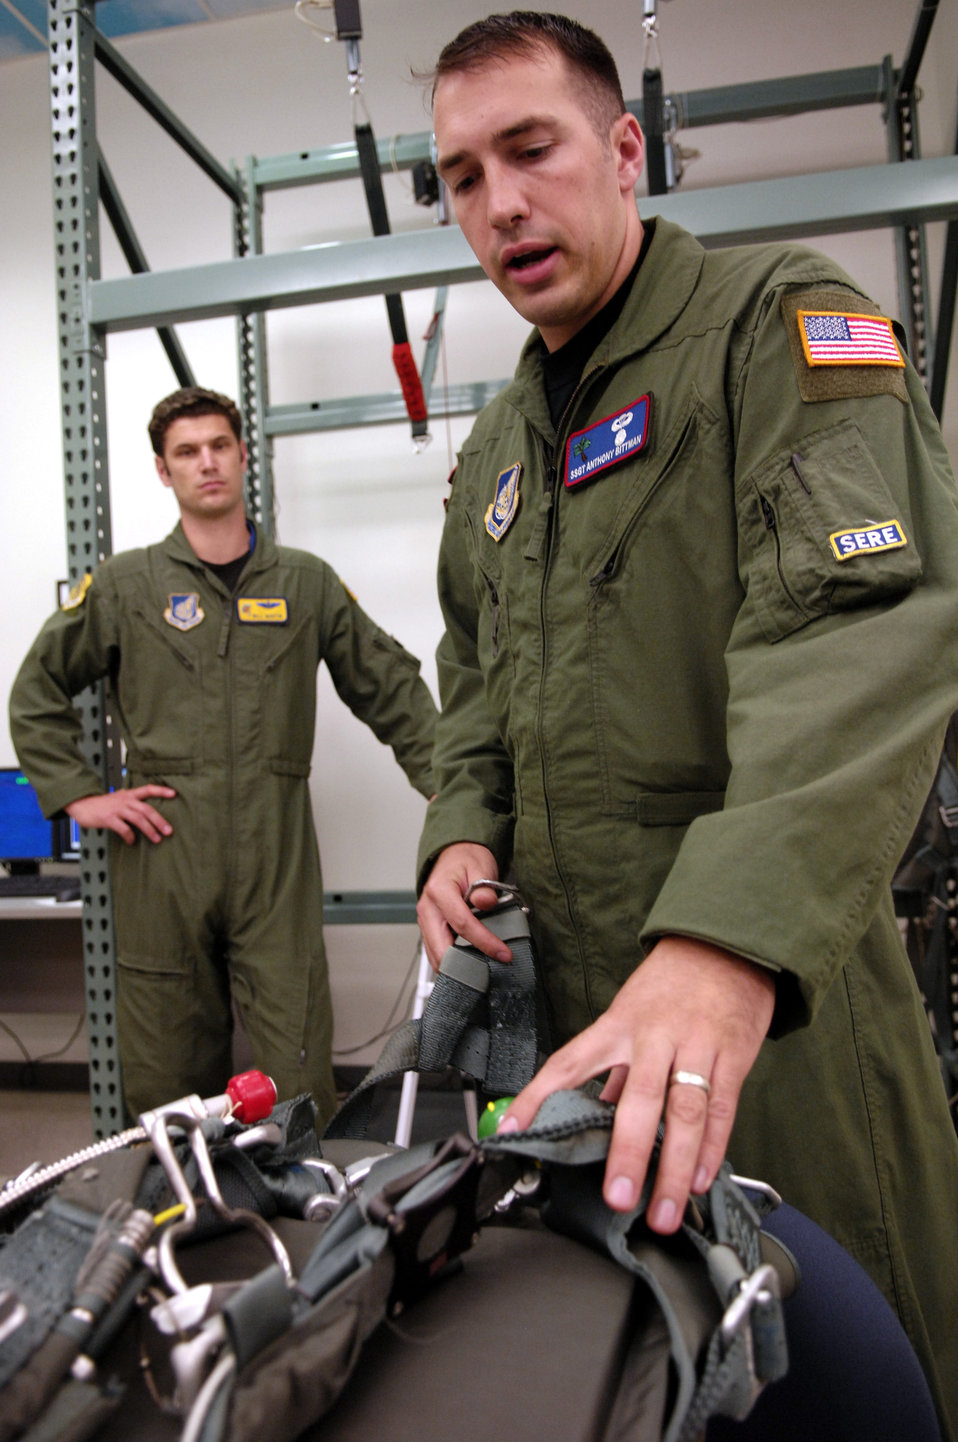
SERE Instructors

Maj. Will Martin (left), a pilot with the 535th Airlift Squadron at Hickam Air Force Base, Hawaii, listens as Staff Sgt. Anthony Bittman provides guidance for using the parachute simulator during a refresher parachute training class Jan 24. Aircrews require annual non-ejection parachute training so they are current according to Air Force instructions. Sergeant Bittman is a survival, evasion, resistance, escape, or SERE, instructor with the 15th Airlift Wing at Hickam.